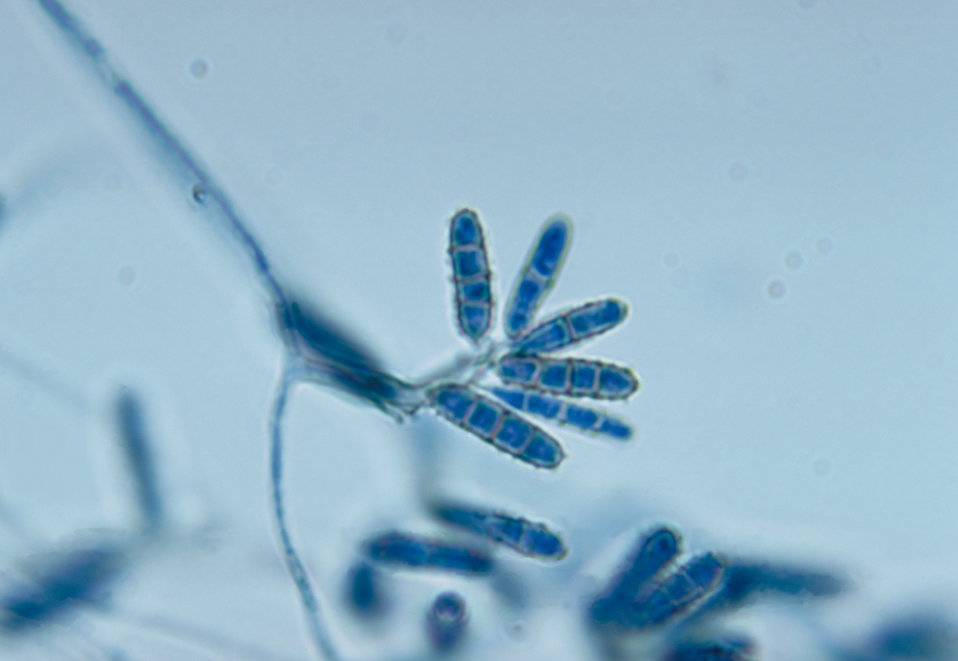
This photomicrograph shows a conidia-laden conidiophore of the fungus Ochroconis constricta.